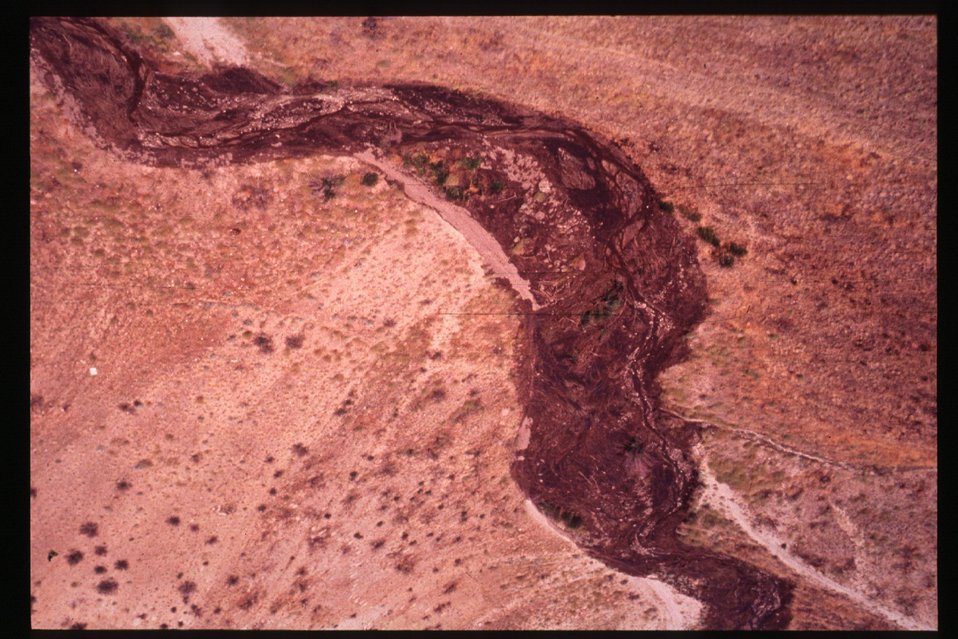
8th Street Fire Four Rivers Field Office LSRD Lower Snake River District